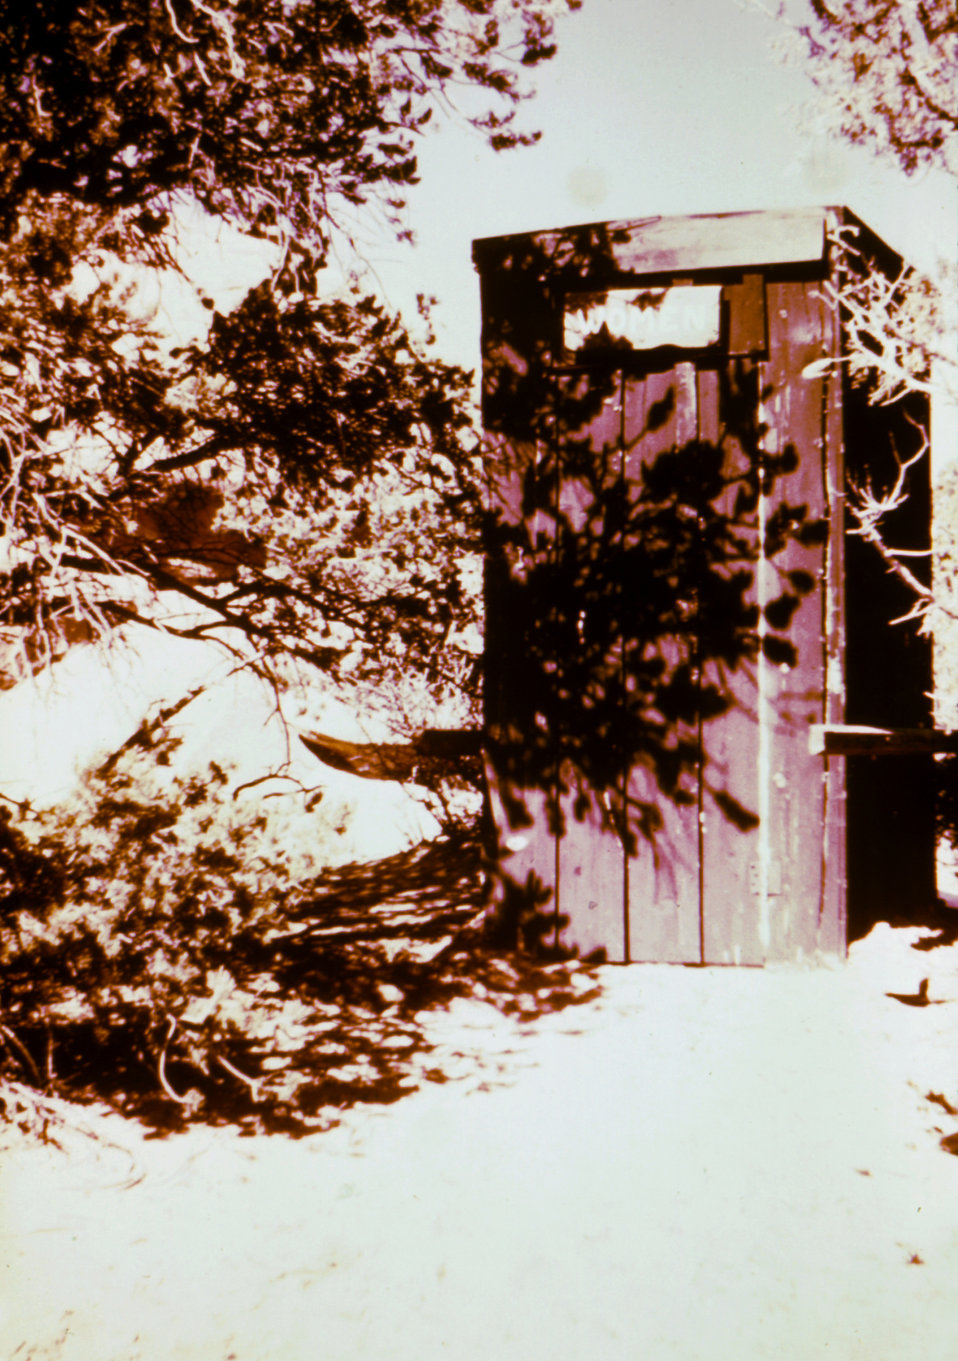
This was part of a series used to familiarize public health inspectors with sanitation conditions in migrant worker camps.